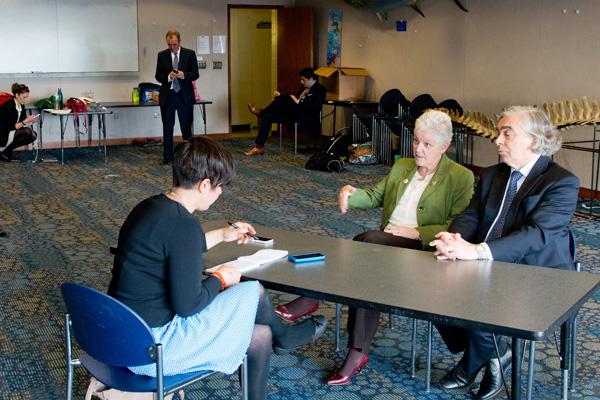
Day in the Life - Earth Day, April 22, 2014

1:13 pm – McCarthy and Moniz sit down for an interview with the Boston Globe, who was writing a day in the life feature on the two officials. (7/12)